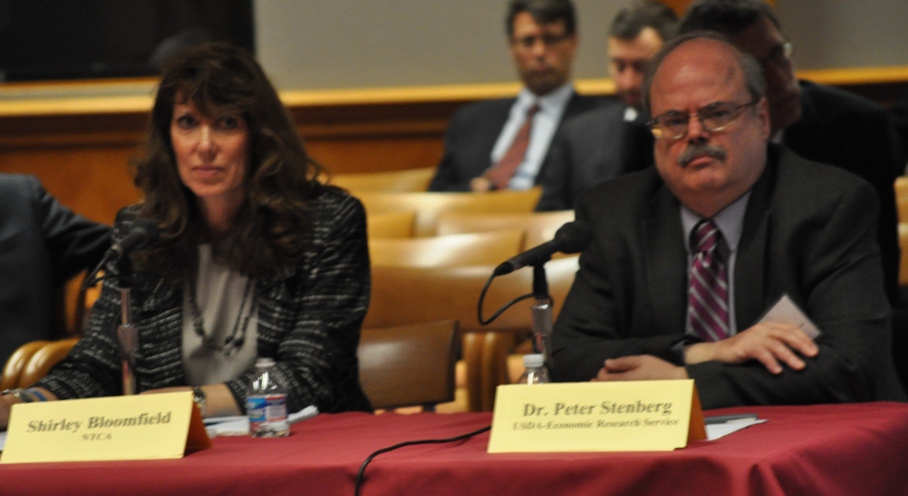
Rural Broadband Workshop: March 19, 2014

Moderators for Panel 1: Broadband Needs, Challenges and Opportunities in Rural America